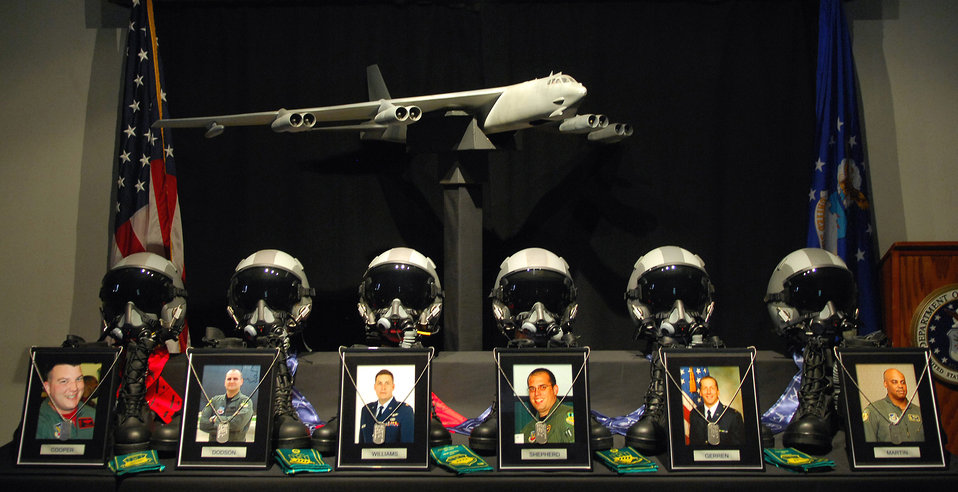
We remember

The 8th Air Force Museum at Barksdale Air Force Base, La., created a memorial July 24 to remember the crewmembers of Raider 21, the B-52 Stratofortress that crashed near Andersen AFB, Guam.